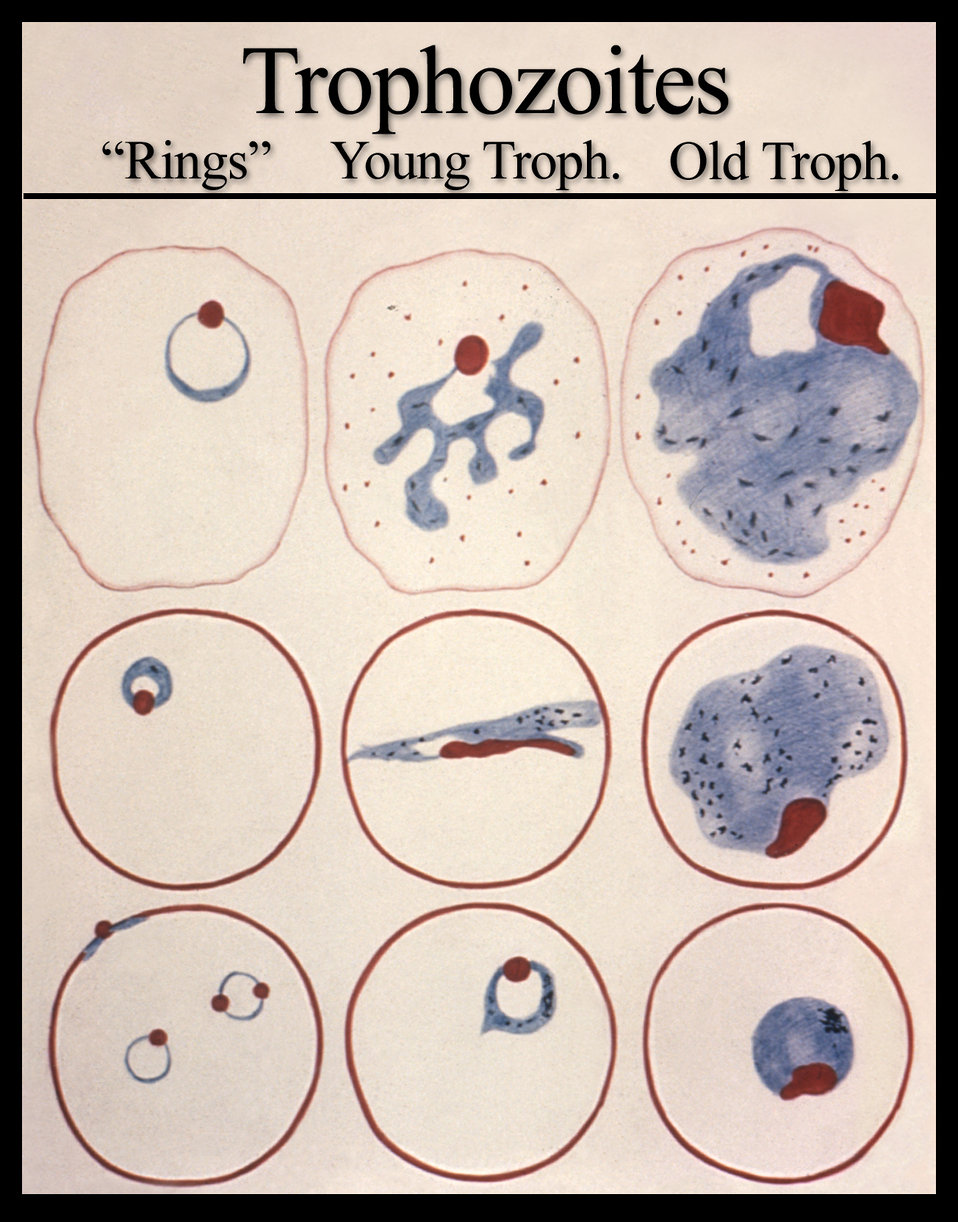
This diagrams, as a trophozoite, the various forms that the developing malarial parasite undergoes prior to its schizont stage.